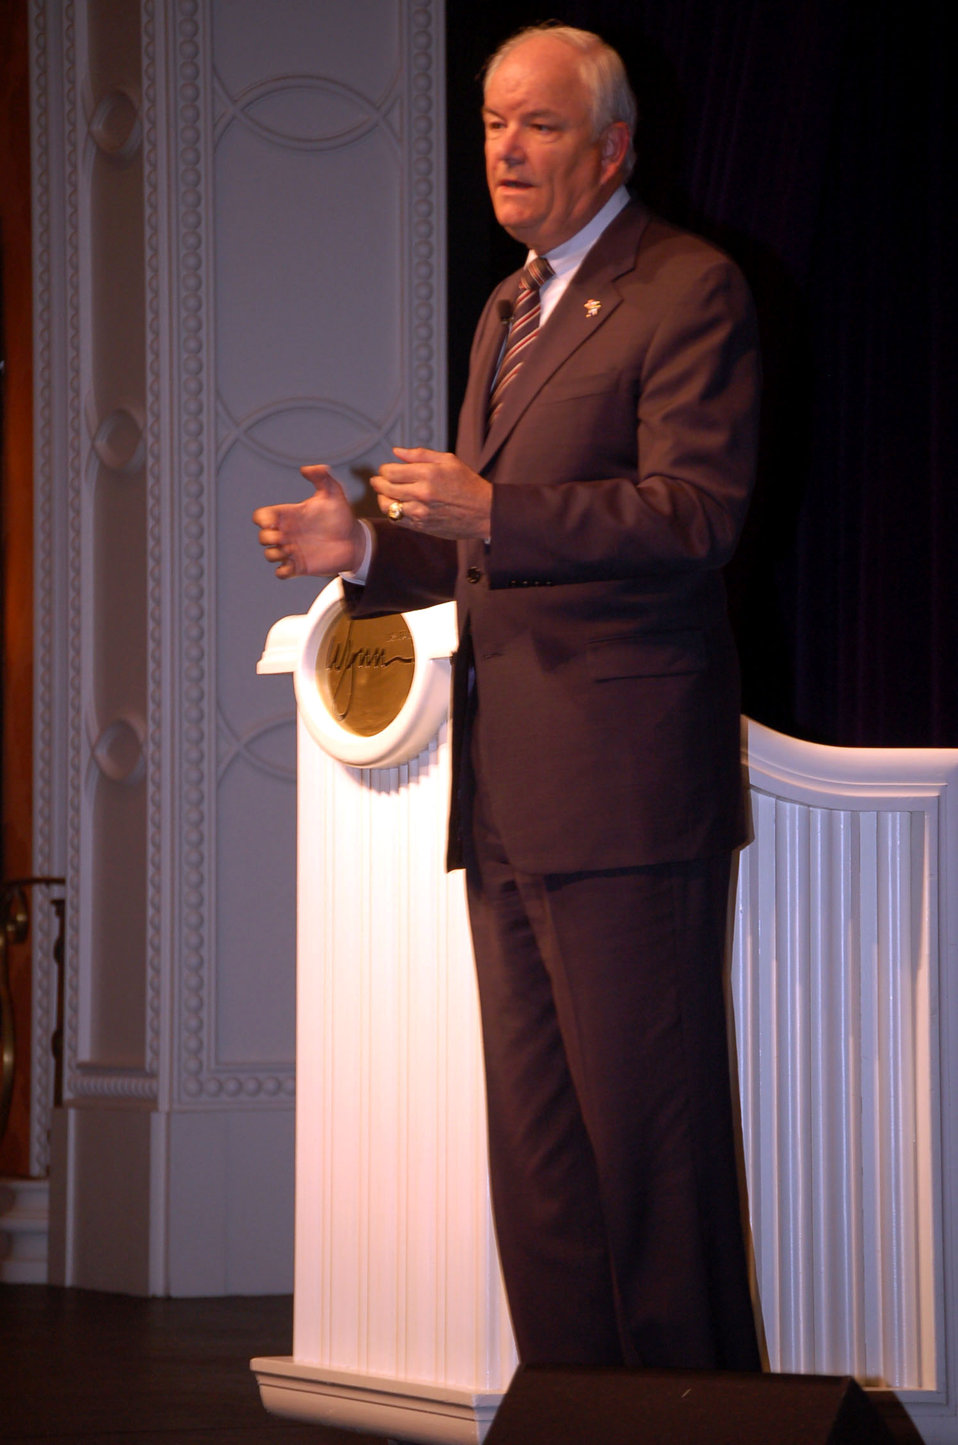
Secretary Wynne speaks at symposium in Las Vegas

Secretary of the Air Force Michael W. Wynne delivers his keynote speech to a crowd of more than 300 people during the 2007 Air and Space Leaders symposium at the Wynn Hotel and resort Nov. 8 in Las Vegas. The crowd included military members from several different nations and civilian industry leaders. The symposium was held in conjunction with the Heritage to Horizons event, which is a celebration of the Air Force's 60th anniversary.